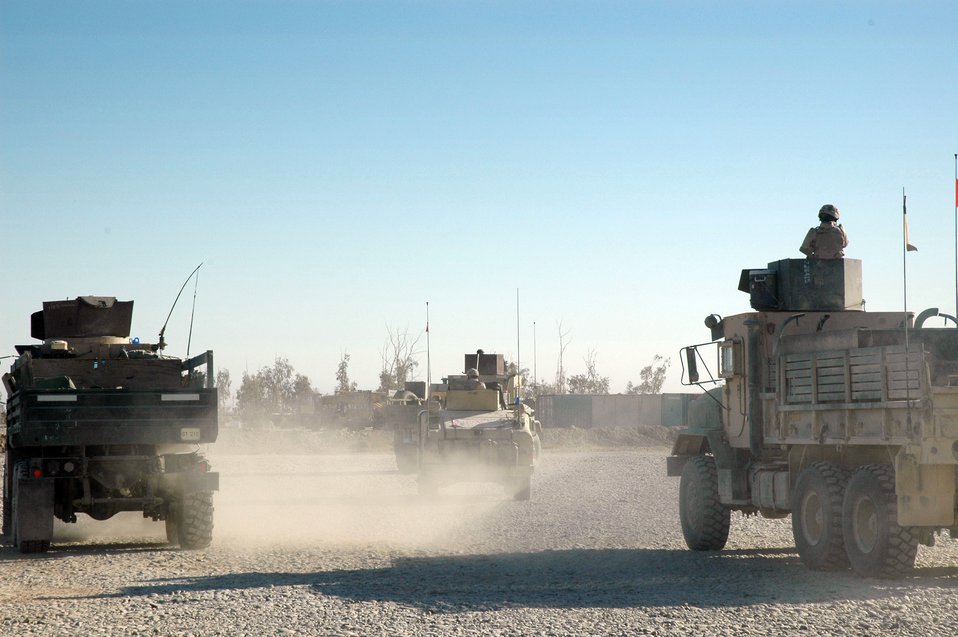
Air Force gun trucks deliver goods

TIKRIT, Iraq (AFPN) -- Airmen assigned to the 723rd Expeditionary Logistics Readiness Squadron depart base Speicher to escort a truck convoy. The Airmen ensure passengers and cargo reach their destinations throughout Iraq.